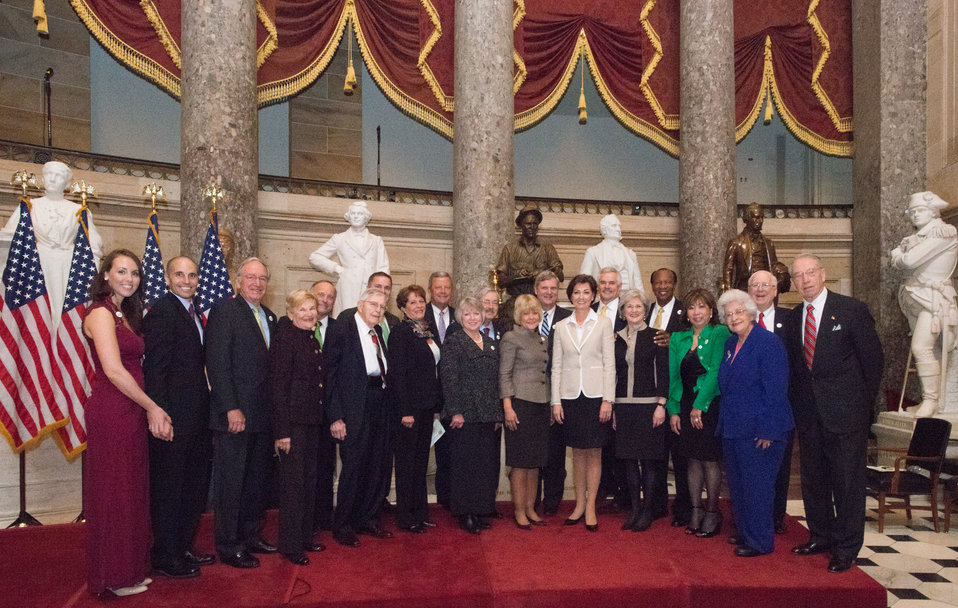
The 7-foot bronze statue of Dr. Norman E. Borlaug was unveiled in the National Statuary Hall at the U. S. Capitol in Washington, D.C. on Tuesday, Mar. 25, 2014. The unveiling was performed by Minority Leader of the House of Representatives Nancy Pelosi, Mr. Bill Borlaug (son of Dr. Borlaug), Agriculture Secretary Tom Vilsack, Speaker of the House of Representatives John Boehner, Iowa Governor Terry Branstad and Majority Leader of the U.S. Senate Harry Reid. Today commemorates 100 years since Dr. Borlaug’s birth. Through his scientific and humanitarian achievements, Nobel Laureate Dr. Norman E. Borlaug (1914-2009) has been credited with saving millions of people from starvation in developing countries. His collaborative work with scientists in Mexico on a high-yielding, disease resistant dwarf wheat sparked the Green Revolution of the 1960s. The National Statuary Hall Collection in the U.S. Capitol is composed of statues donated by individual states to honor persons notable in their history.